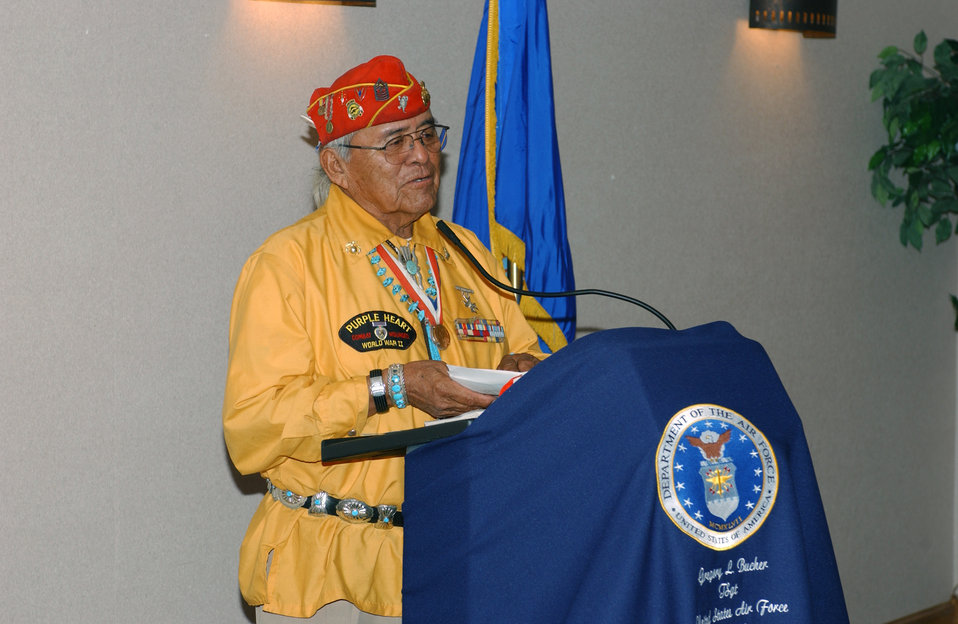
Code Talker describes military experience

CANNON AIR FORCE BASE, N.M. -- Former Marine Gunnery Sgt. Teddy Draper Sr., a Navajo Code Talker, tells about his experiences on the beaches of Iwo Jima during World War II.